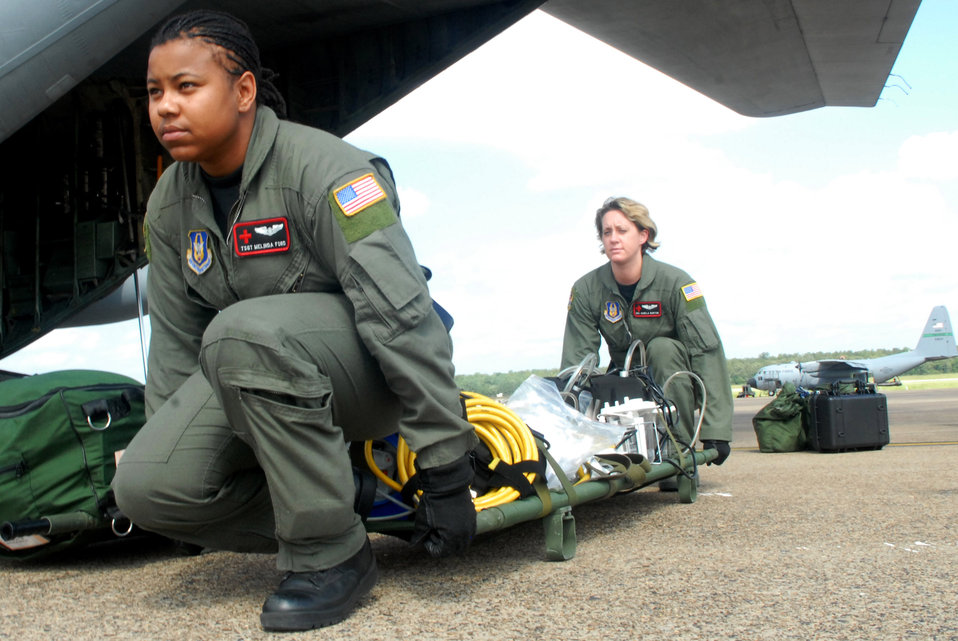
On three...

Tech. Sgt Angela Burton and Senior Airman Melinda Ford unload medical equipment from a C-130 Hercules Sept. 12 at Little Rock Air Force Base, Ark., in preparation for Hurricane Ike's landfall in Texas.